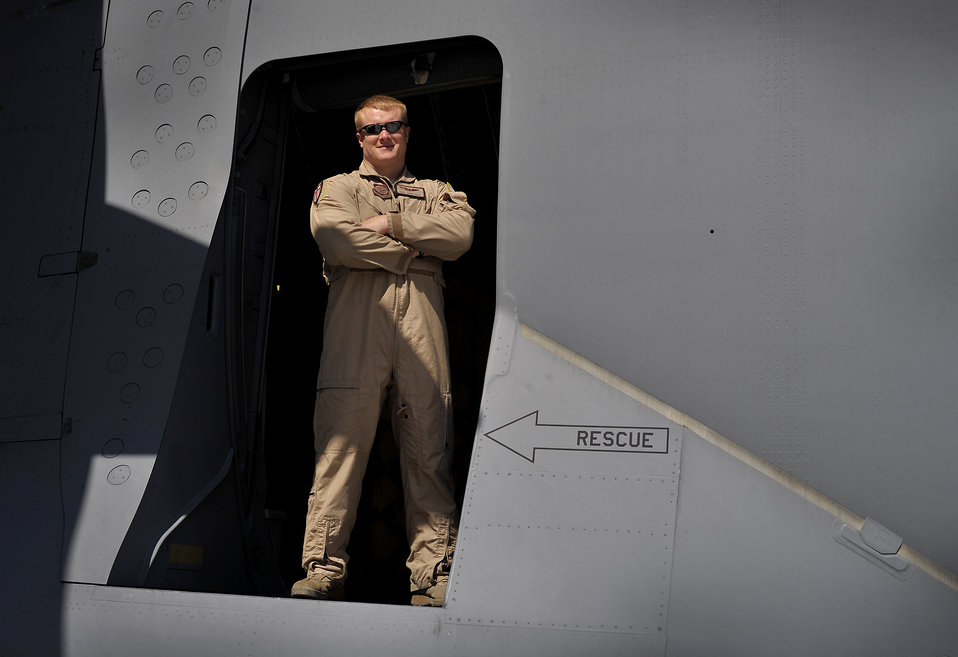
C-17 loadmaster

Staff Sgt. James Harp, currently deployed with the 817th Expeditionary Airlift Squadron, Transit Center at Manas, Kyrgyzstan, smiles in the door of a C-17 Globemaster III. Harp is one of several loadmasters contributing to redeployment operations in Afghanistan. Harp heavily relied upon by the squadron as a loadmaster evaluator and has been in the Air Force for six and a half years.